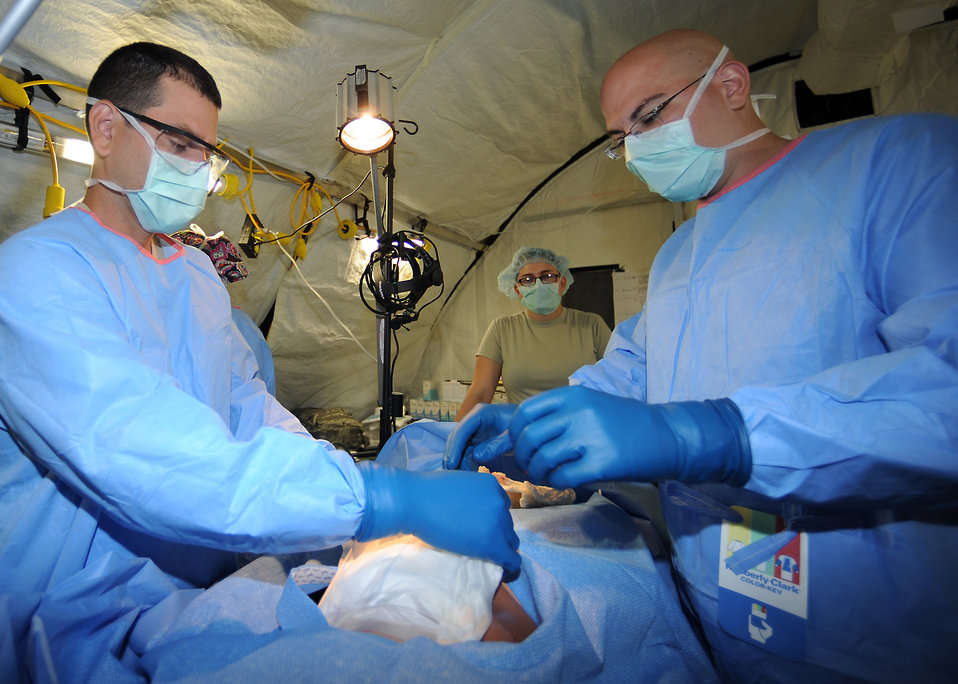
Vibrant Response 13

Air Force medical personnel assigned to Expeditionary Medical Support clean an abdominal wound on a simulated injured patient in support of exercise Vibrant Response 13 at Contingency Operating Location Nighthawk at Camp Atterbury, Ind., July 30, 2012. Vibrant Response is a U.S. Northern Command-sponsored field training exercise for chemical, biological, radiological, nuclear and high-yield explosive consequence management forces designed to improve their ability to respond to catastrophic incidents.